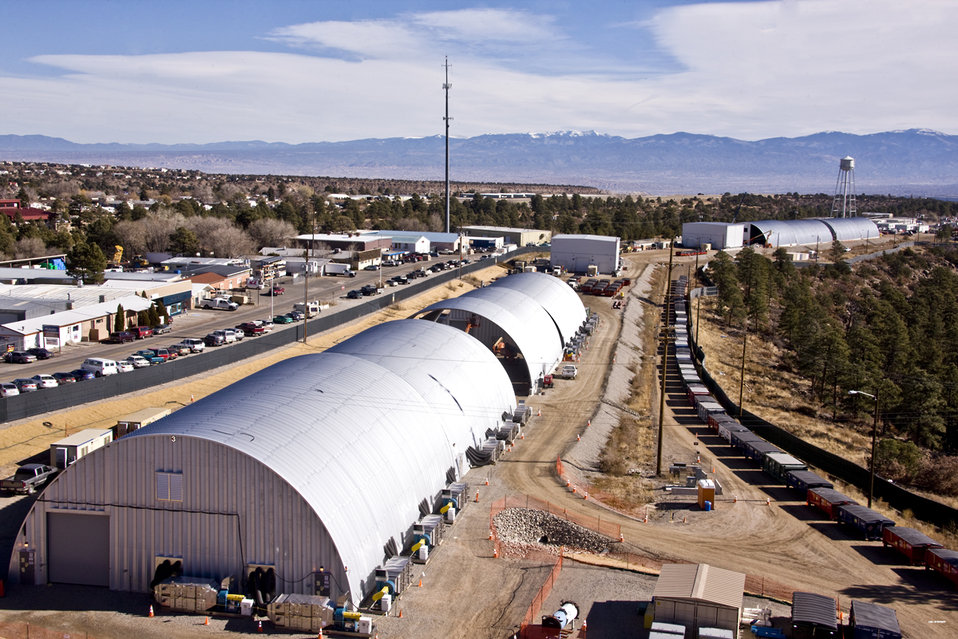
Los Alamos Lab Completes Excavation of Waste Disposal Site Used in the 1940s

Los Alamos National Laboratory completed excavation of its oldest waste disposal site, Material Disposal Area B (MDA-B), in September 2011 thanks to American Recovery and Reinvestment Act funding.

The excavation of MDA-B was conducted inside sturdy
metal enclosures.